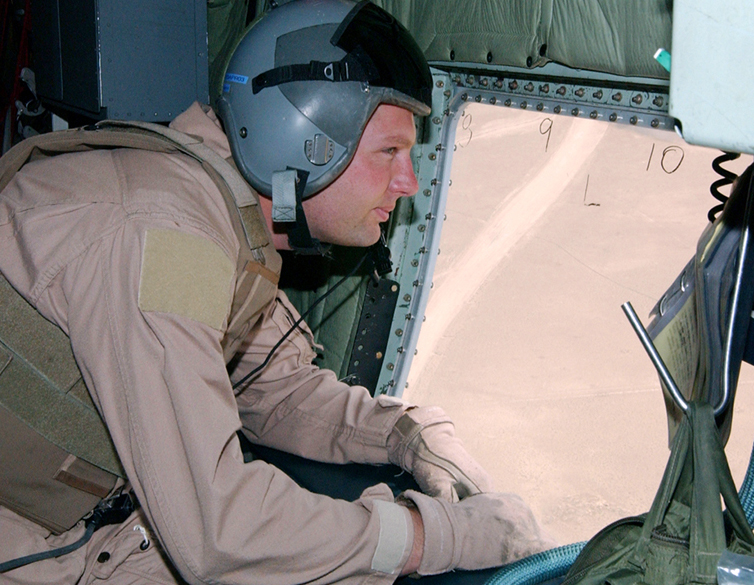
Draper

OPERATION IRAQI FREEDOM -- Master Sgt. Eric Draper scans the desert for possible threats as his HC-130 flies into a U.S.-controlled airfield in southern Iraq on April 3. Draper is a loadmaster with the 39th Rescue Squadron from Patrick Air Force Base, Fla., deployed to support Operation Iraqi Freedom.